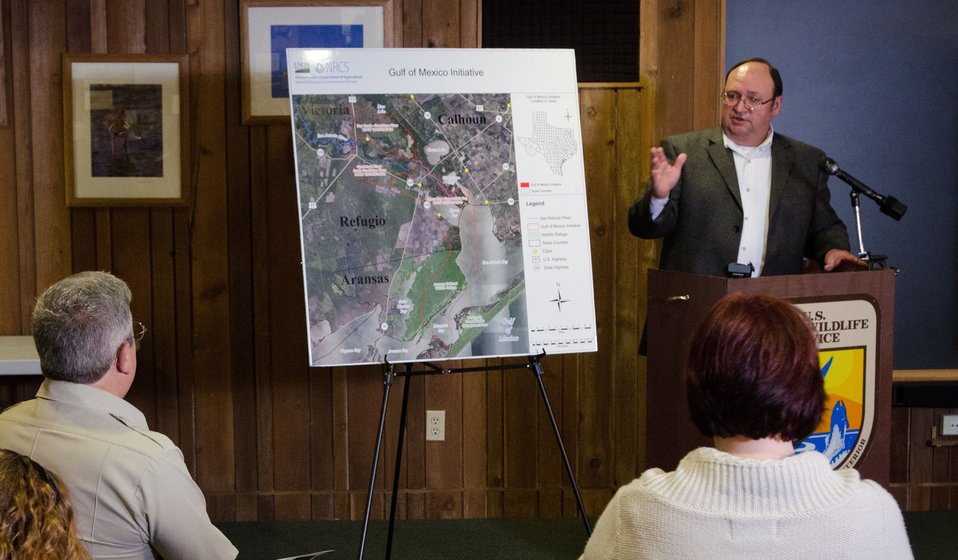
U.S. Department of Agriculture (USDA) Natural Resources Conservation Service (NRCS) State Conservationist Salvador Salinas with Federal and state partners, including representatives from U.S. Fish and Wildlife Service and local soil and water conservation districts (SWCDs) held a press conference at the Aransas National Wildlife Refuge, in Austwell, TX, on Friday, Dec. 16, 2011. Salinas covered the recent announcement of the USDA-NRCS Gulf of Mexico Initiative (GoMI) efforts to improve water quality, habitat, and the health of the Gulf ecosystem. “Launching this initiative is a top priority for NRCS in Texas because the Gulf of Mexico is one of our state’s premier natural resources. It provides vital habitat for wildlife, and creates jobs in industries that depend upon them. The health of this resource is essential to Texas as well as to the nation,” said Salinas.
The Texas initiative focuses on three watersheds in Refugio, Calhoun, Victoria and Aransas counties and ultimately the Gulf of Mexico. “What is really compelling about GoMI and other similar conservation efforts is that they prove that Texas farmers and ranchers not only feed and clothe us and power our vehicles, but they can also help protect and restore our rivers and provide more habitat for wildlife,” stated Salinas. “That’s why it is important that this conservation project is not about taking productive farm land out of production. This is a working lands initiative, so that not only are we helping to restore the health of the Gulf, but we’re also helping to sustain and enhance the productivity of the Gulf’s farms and ranches.”